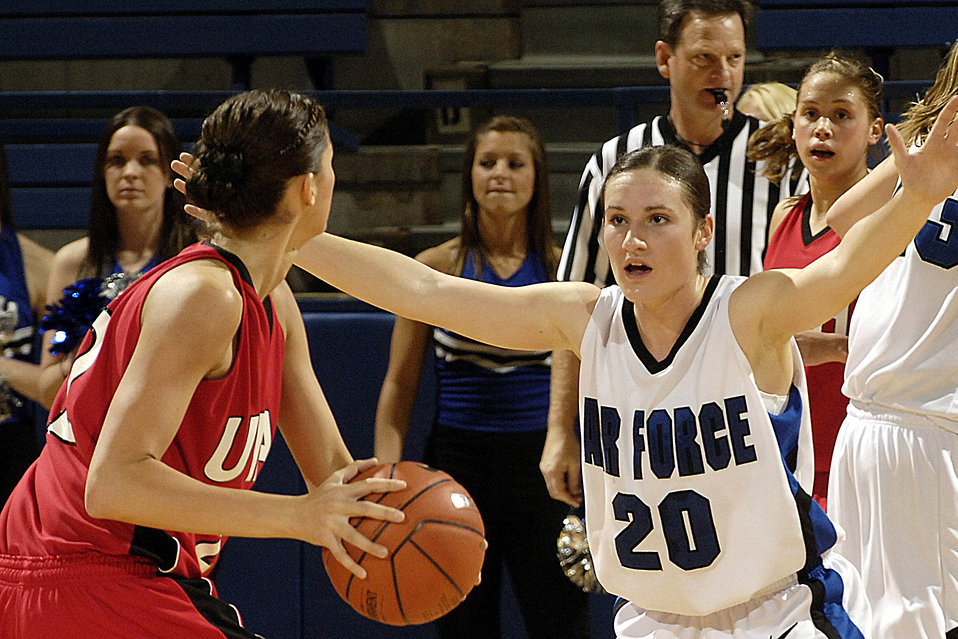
Lady Falcons fall to Utah

U.S. Air Force Academy Falcon freshman guard Raimee Beck defends the basket during the 60-50 loss against Utah Jan. 9 in Clune Arena at Colorado Springs, Colo.